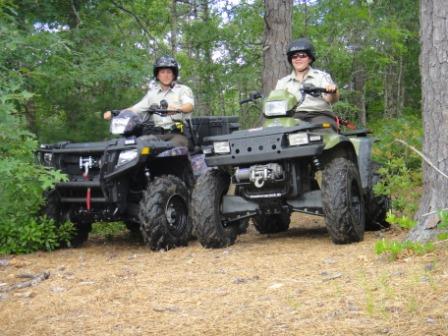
Law enforcement SCEP

U.S. Fish and Wildlife Service